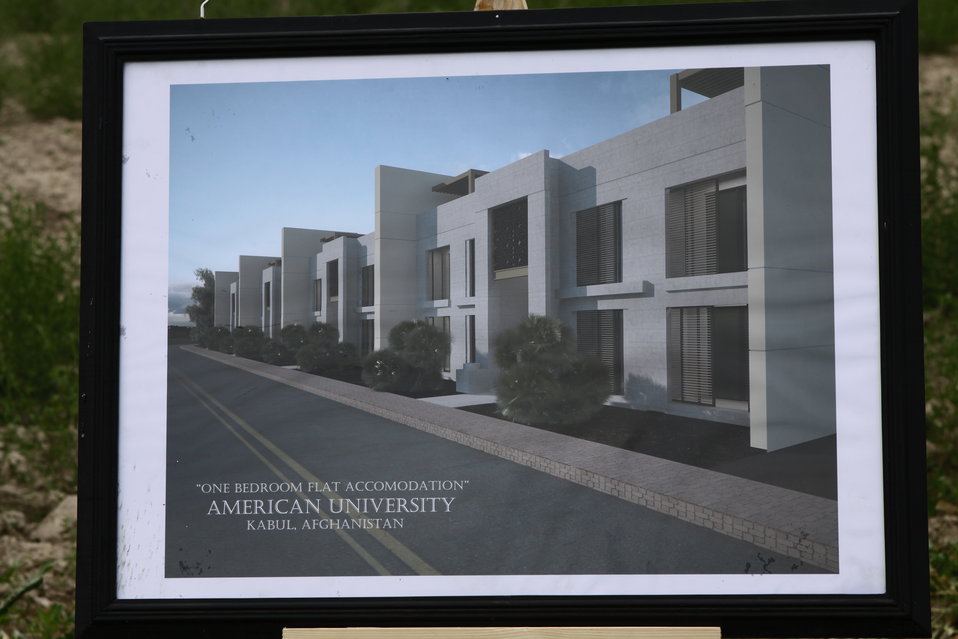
100526 AUAF Graduation 398